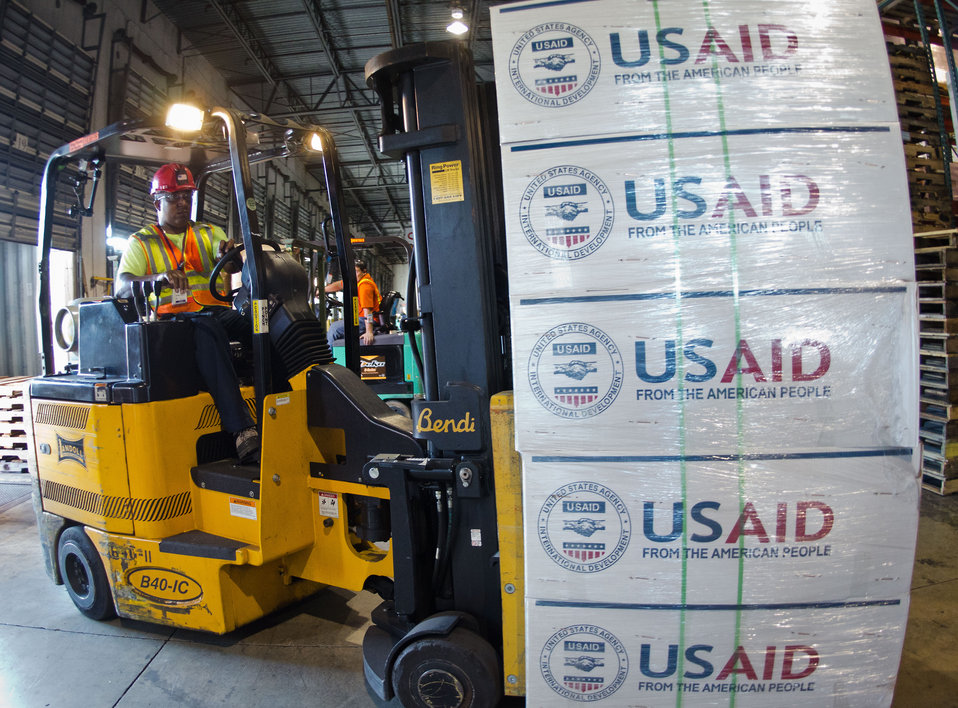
Crowley Logistics in Miami, FL on Friday, August 26, 2011 is one of three U.S. Agency for International Development (USAID) shipping and logistics facilities in the nation. In times of emergency humanitarian relief aid, they can respond with supplies delivered to aircraft at Miami International Airport within two hours. They utilize articulating forklifts, which hinge in the middle to store and retrieve pallets of supplies through narrow aisle ways. This allows for a higher density of stored supplies in the warehouse. Pallets of supplies are stacked three levels high. USAID provides humanitarian assistance through the Office of U.S. Foreign Disaster Assistance (OFDA). OFDA is the lead U.S. Government (USG) office charged with providing and coordinating USG humanitarian assistance in response to international emergencies and disasters. To achieve this, USAID works in cooperation with other USG offices such as the U.S. Department of Agriculture (USDA), and international humanitarian experts. The USDA provides food assistance to support emergency feeding programs in countries experiencing food shortages due to drought and civil conflict.